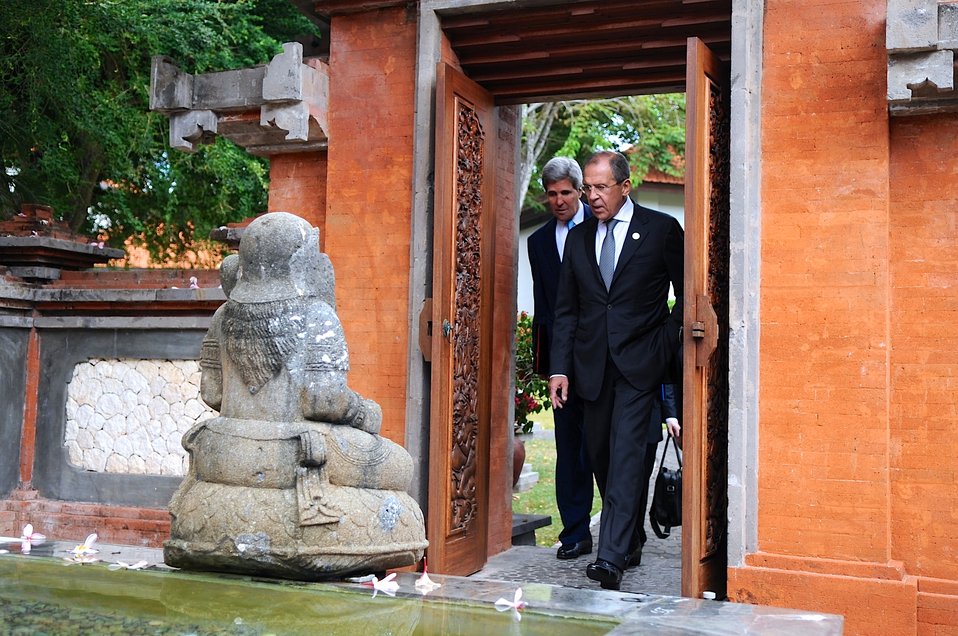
Secretary Kerry and Russian Foreign Minister Lavrov Attend APEC Meetings in Indonesia

U.S. Secretary of State John Kerry and Russian Foreign Minister Sergey Lavrov walk to their one-on-one discussion on the margins of the APEC Leaders meeting in Bali, Indonesia, October 7, 2013.